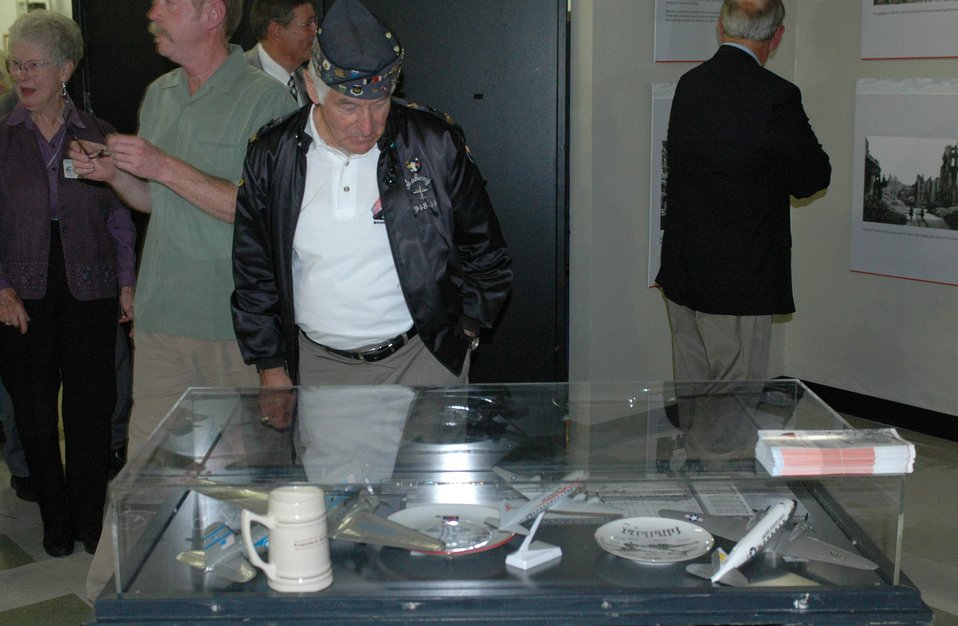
Berlin Airlift vets recognized by German government

Retired Master Sgt. Johnny Macia looks at artifacts from the Berlin Airlift as he walks through the 60th anniversary of the Berlin Airlift exhibit Oct. 15 at Travis Air Force Base, Calif. He is a a Berlin Airlift veteran.